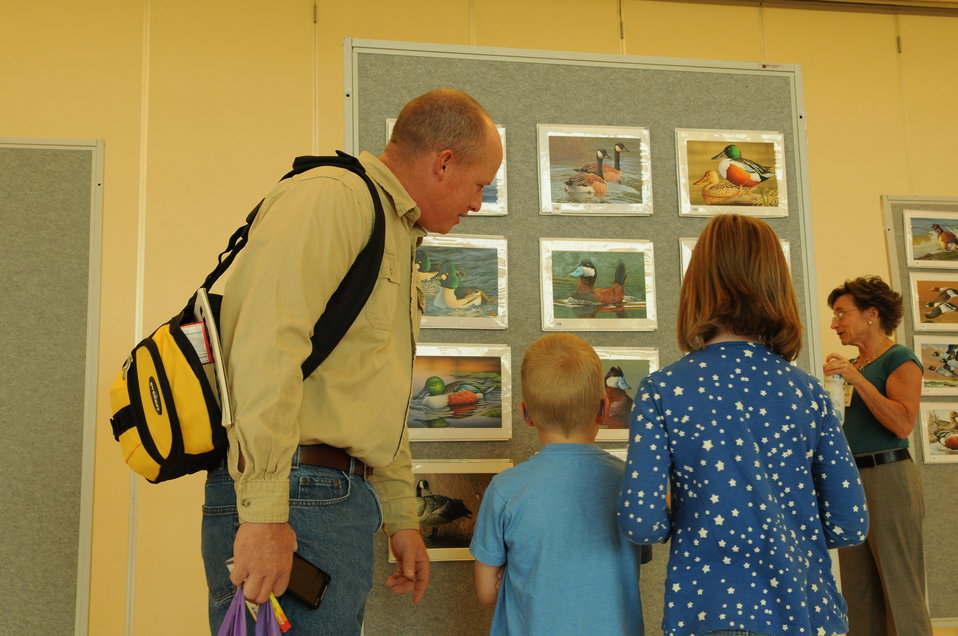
Artwork Displays

The U.S. Fish & Wildlife Service sponsored the 2012 Federal Duck Stamp Art Contest September 28 and 29 in Ogden, Utah, at Weber State University. A panel of five judges was responsible for choosing the art work used to design the 2013-2014 Migratory Bird Hunting and Conservation Stamp.